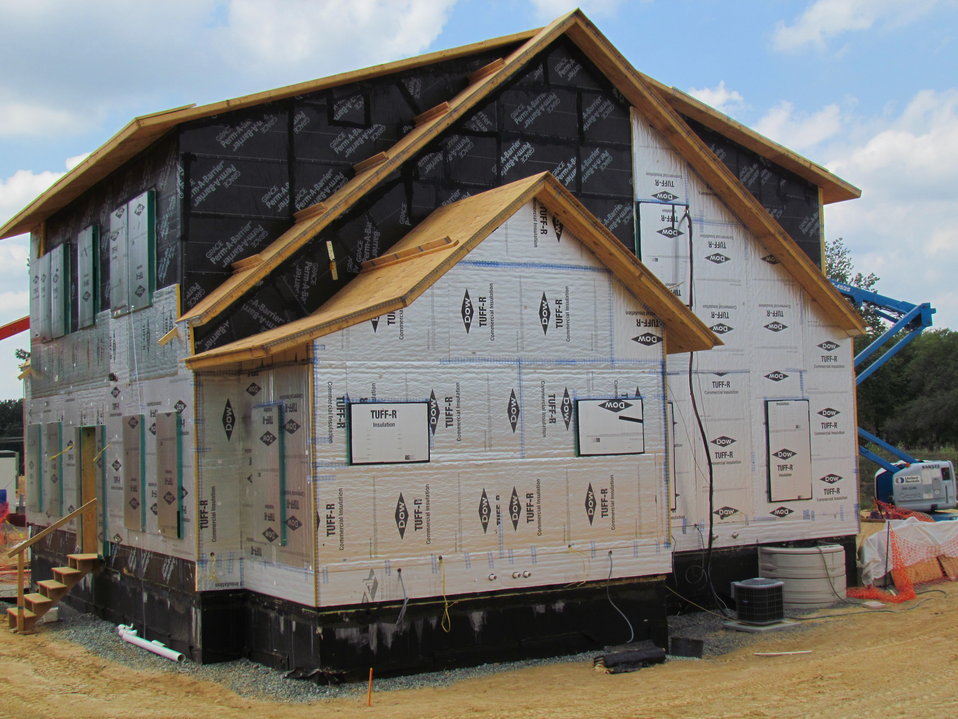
Net-Zero Energy Residential Test Facility - Construction photo showing the first of two layers of two-inch thick insulation being installed on the south and east walls of the facility.